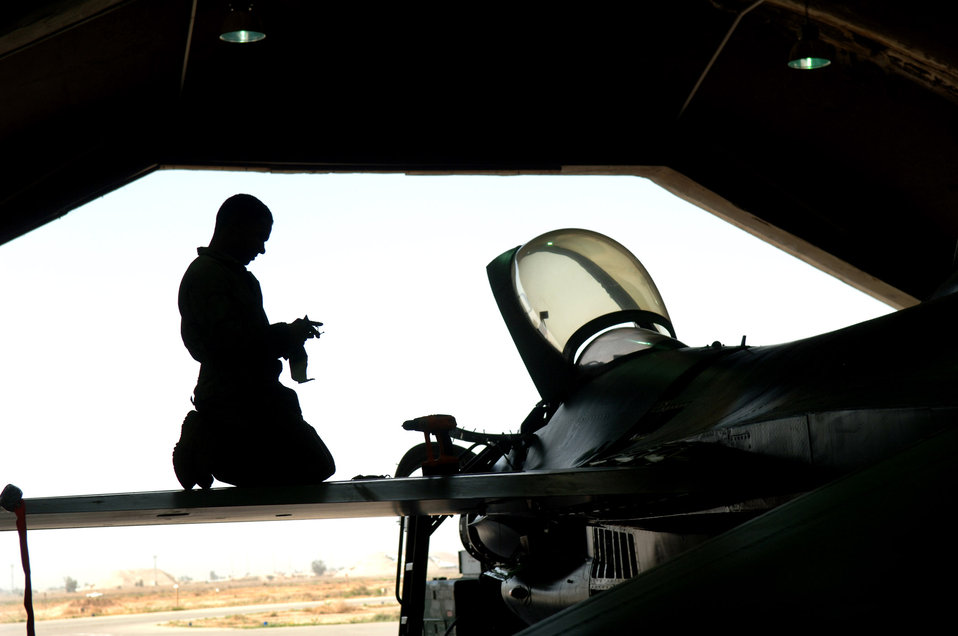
Getting ready for the next mission

Senior Airman Gil Alicea performs a phase dock inspection on an F-16 Fighting Falcon April 16 at Balad Air Base, Iraq. Maintainers run the inspection every 400 flying hours to keep the aircraft mission-ready. Airman Alicea is with the 332nd Expeditionary Maintenance Squadron.